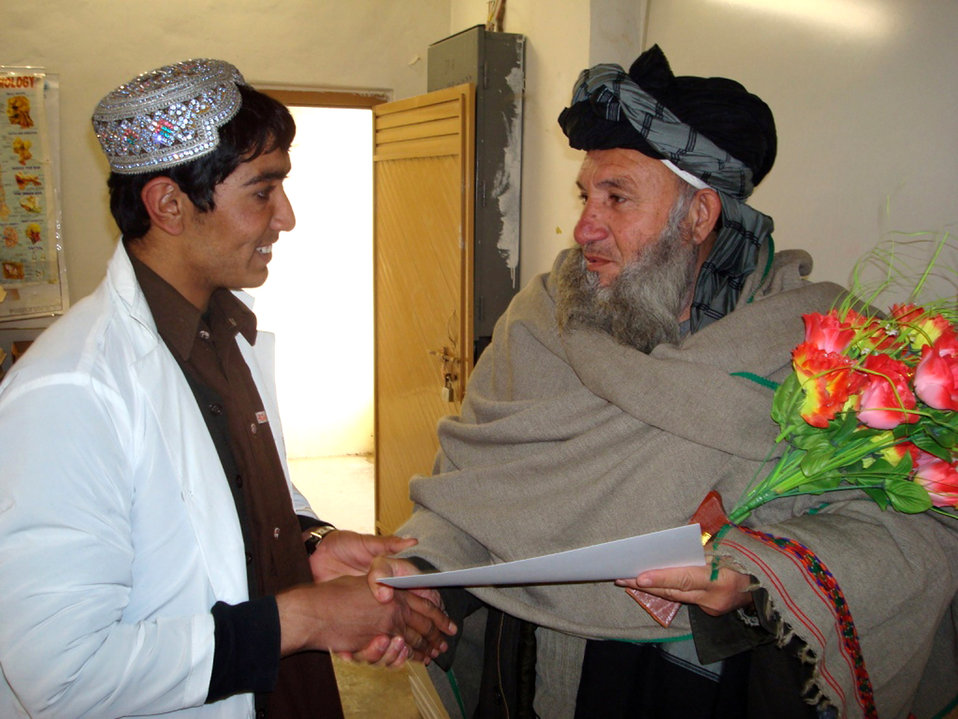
Afghans complete advanced medical training

Ahmadullah (left), a graduate of the basic nursing program here accepts his certificate of completion Feb. 5 from Director of Ibn Sina Medical Dr. Fazul Rahman. The 12-month training program-facilitated by the joint Air Force and Army Provincial Reconstruction Team-teaches students the basics of nursing: taking vital signs, assessing overall health, initial patient screening, medical terminology and an overview of medications. The course is taught by a local Afghan employed by the PRT.